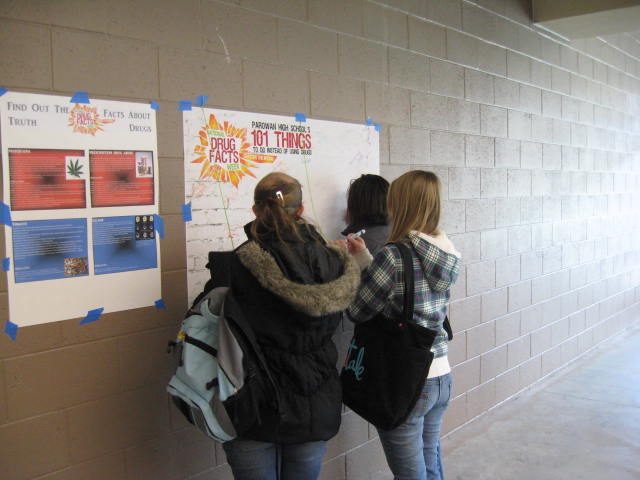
NDFW Assembly in Cedar City, UT

The students signed a pledge to be drug and alcohol free.